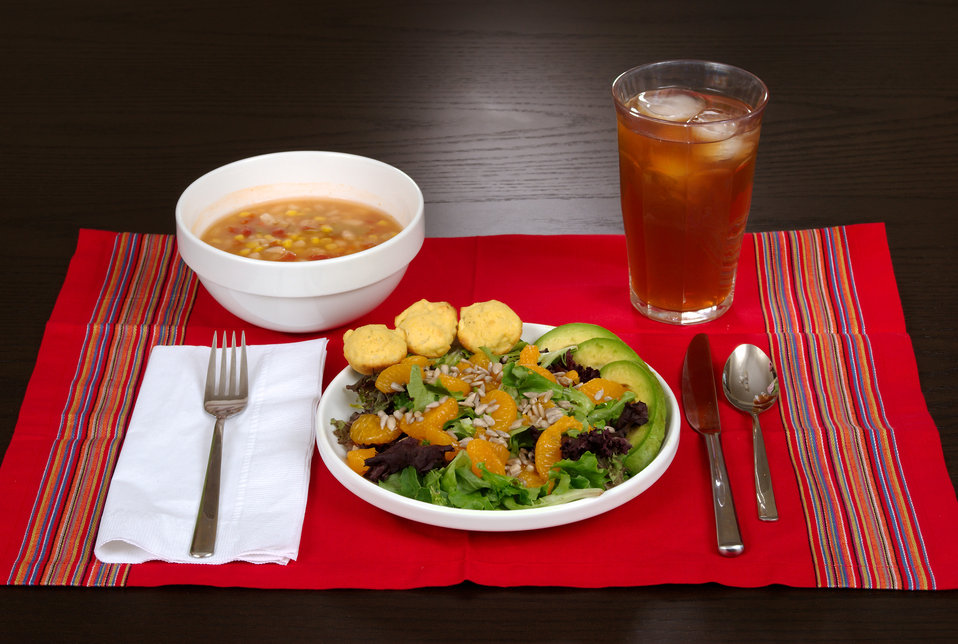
This is one healthy meal packed with nutrient-dense ingredients. Included on the menu was corn and bean soup, mandarin orange salad with avocado slices and sunflower seeds, low-salt, low-fat cornbread mini muffins, and unsweetened tea. Stick with nutrient-dense rather than calorie dense, hi-fat foods, and your dietary choices, by and large, will be healthier ones.